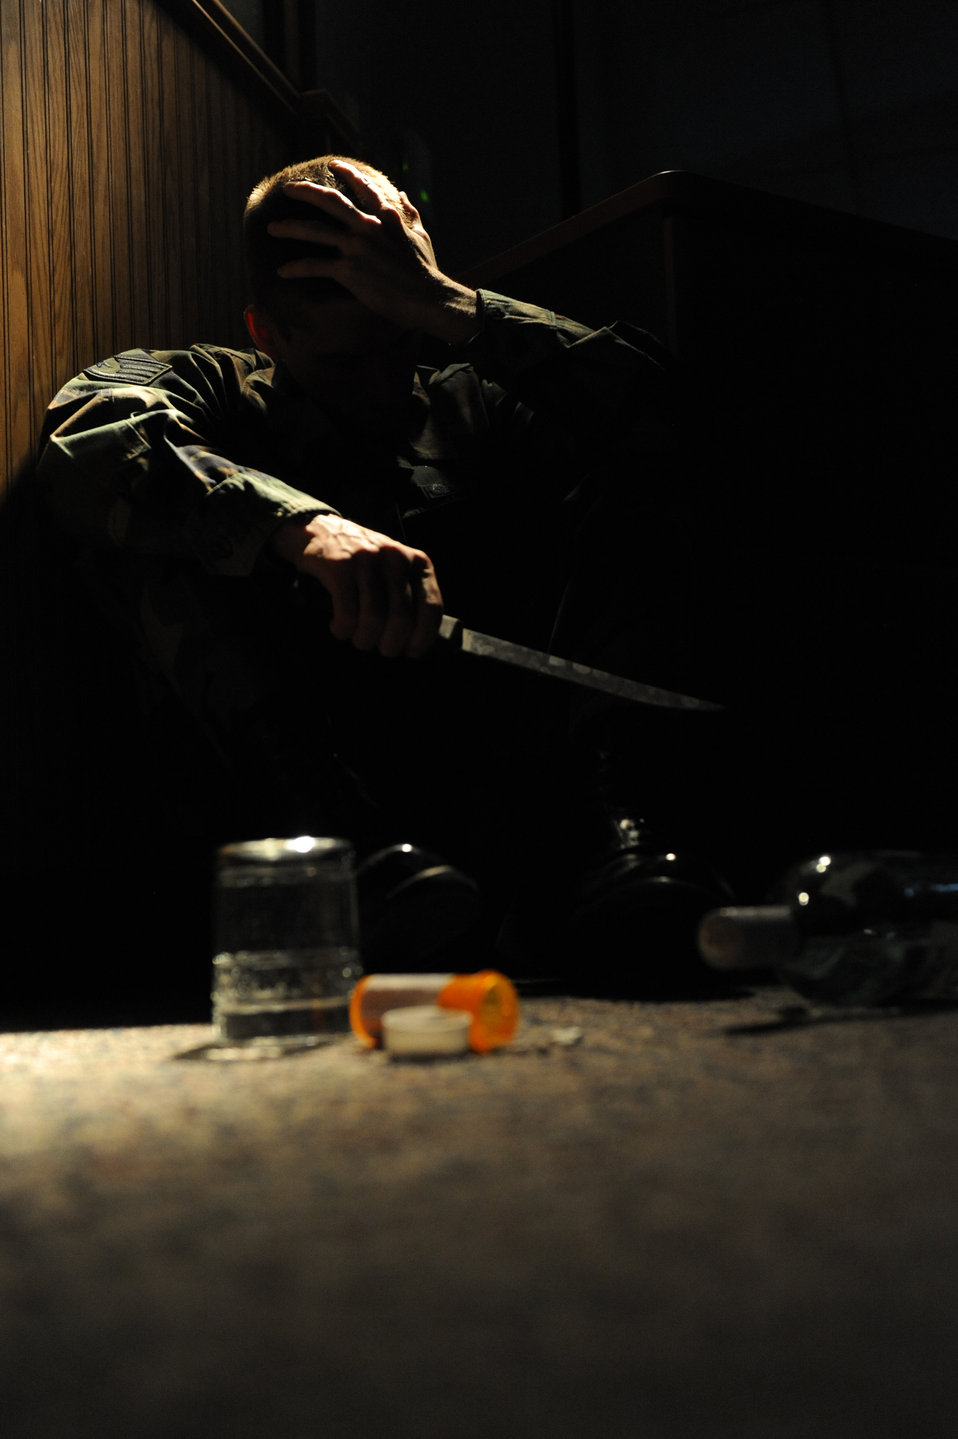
Suicide prevention: The effort starts with you

Suicide prevention and awareness briefings are available by base medical professionals. Other sources for more information include the Military One Source/Military Homefront Web sites and the annual computer based training.